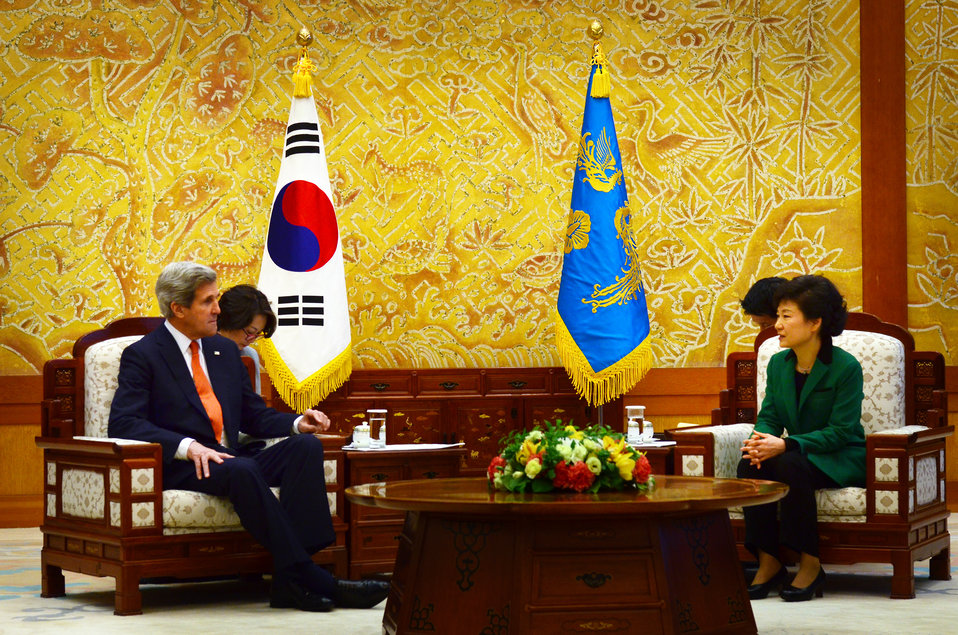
Secretary Kerry Meets With South Korean President Park Geun-hye

U.S. Secretary of State John Kerry meets with South Korean President Park Geun-hye at the Blue House in Seoul, South Korea, on April 12, 2013.